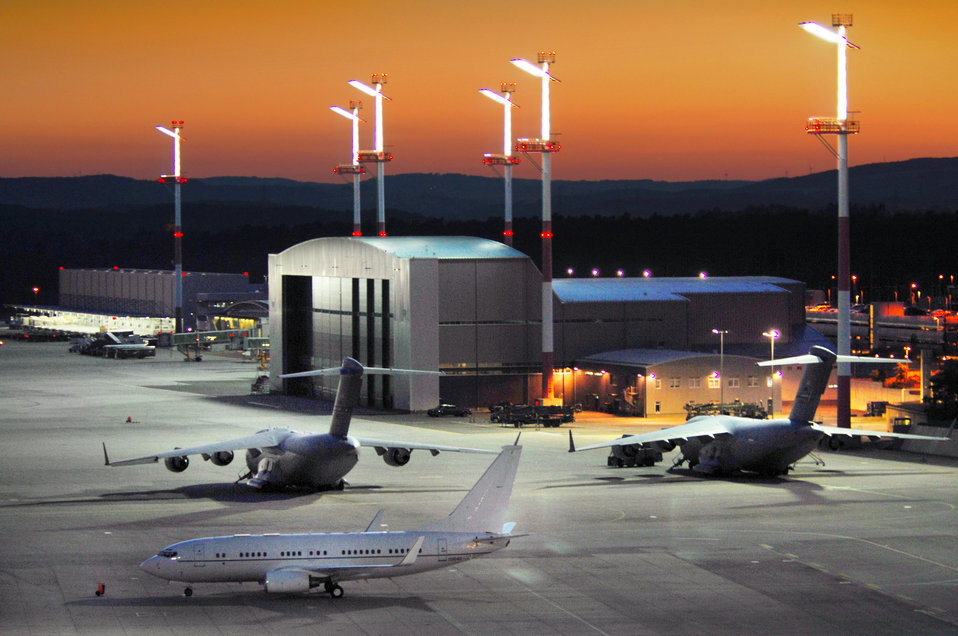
Night shift begins

As the sun sets over the flightline June 6 at Ramstein Air Base, Germany, work continues and night operations begin. Two C-17 Globemaster, along with other aircraft, are prepped and ready for scheduled missions.